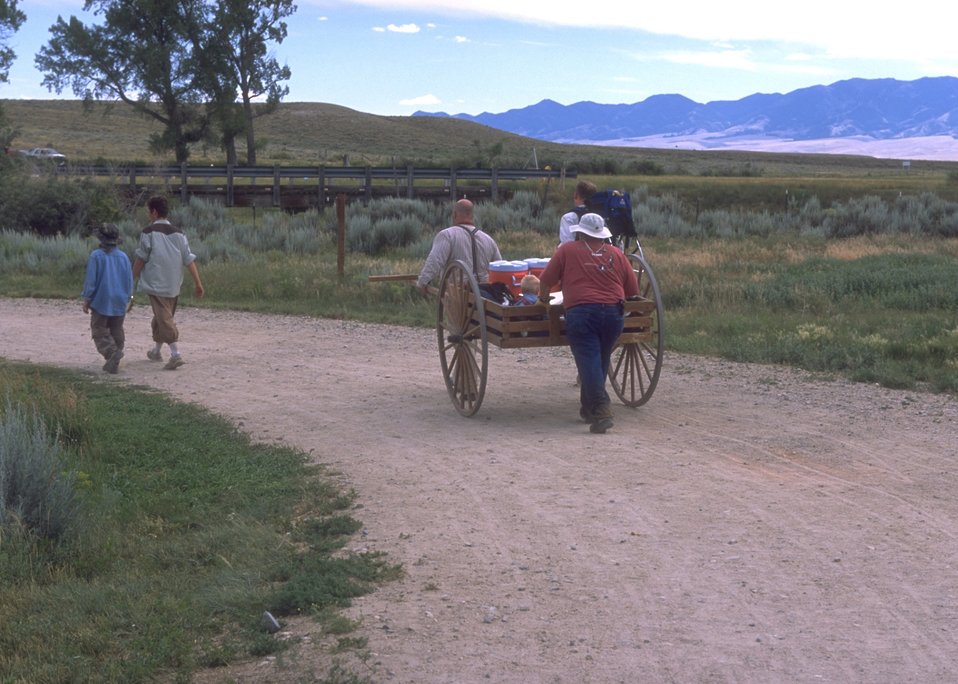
Handcart re-enactment near Martin's Cove, Rawlins Field Office.